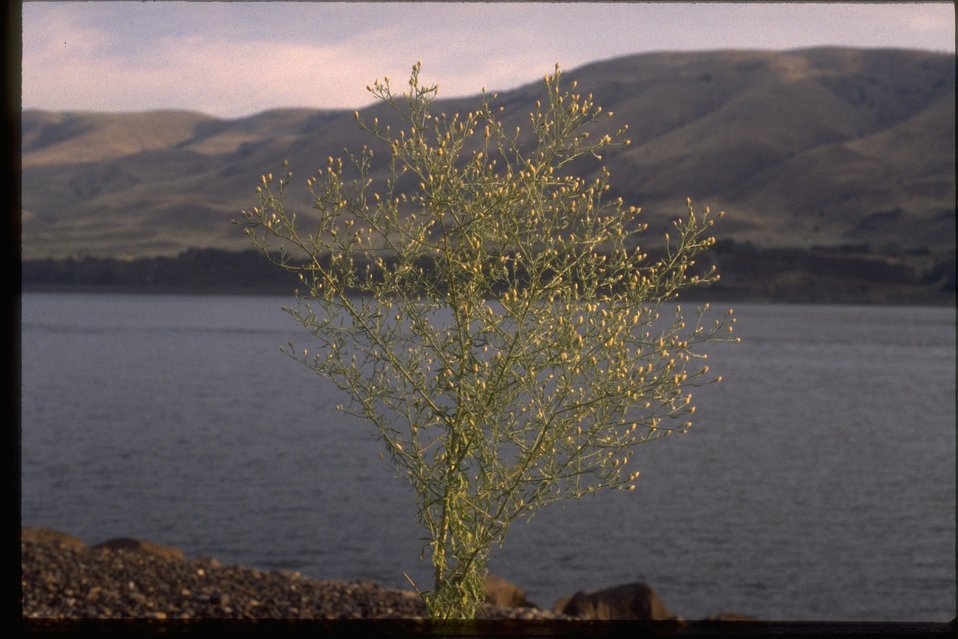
Single plant of diffused knapweed.